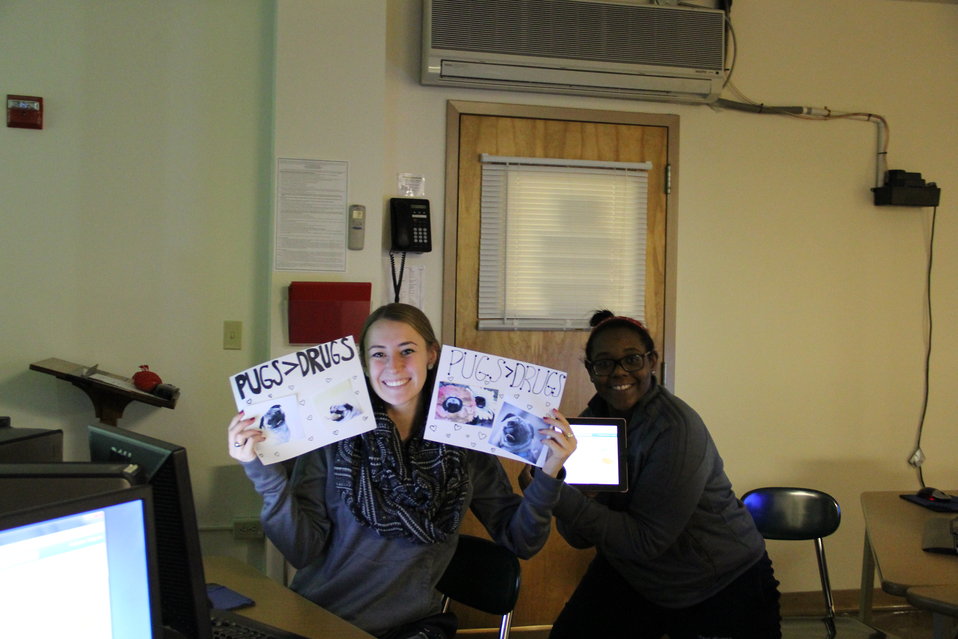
IQ Challenge---Teens Get the Facts

Teens at Mount Alvernia High School in Newton, Mass. take the NIDA's IQ Challenge during NDFW's CHAT DAY 2014.